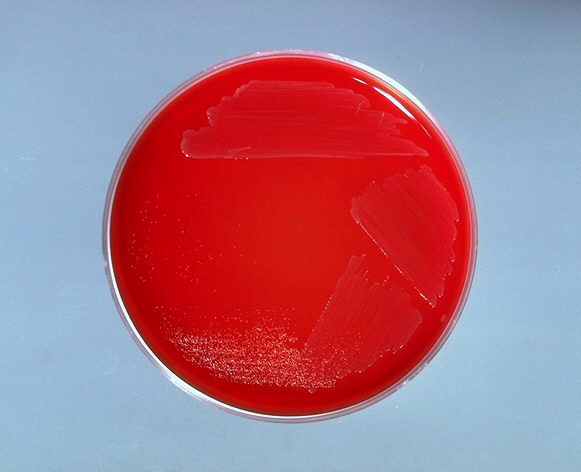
Blood agar plate culture of Haemophilus aphrophilus.